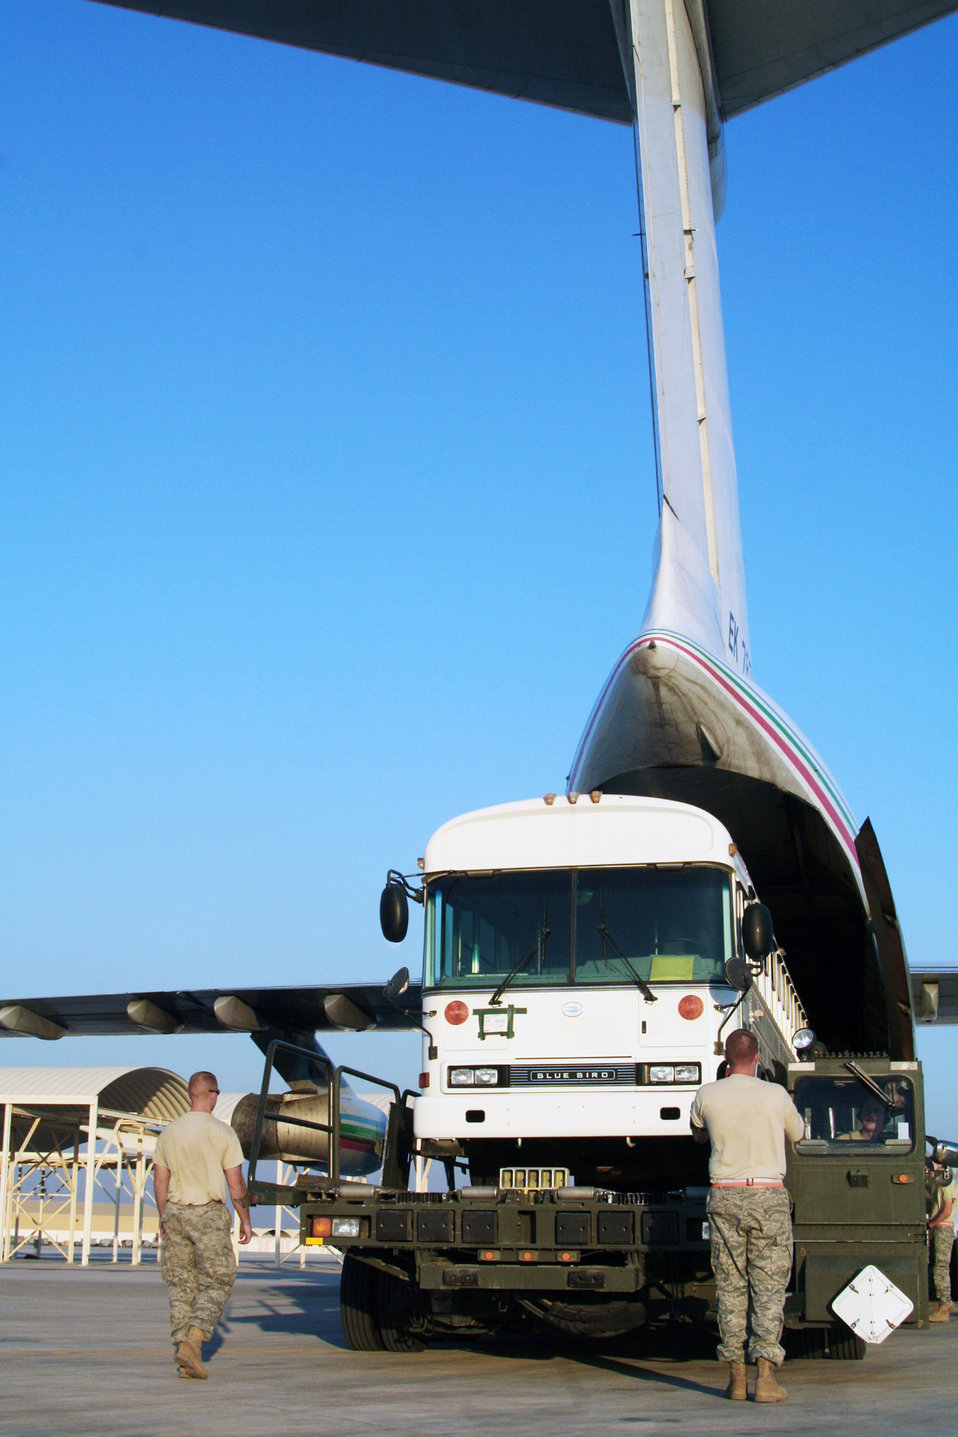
Deployed aerial porters load American buses on Russian-made transport bound for Afghanistan

Air transportation Airmen assigned to the 380th Expeditionary Logistics Readiness Squadron Air Terminal Operations Center load a 44-passenger bus onto a Russian-built IL-76 transport plane during operations Dec. 30, 2009, at an air base in Southwest Asia. The 380th Air Expeditionary Wing supports operations Iraqi Freedom and Enduring Freedom and the Combined Joint Task Force-Horn of Africa.